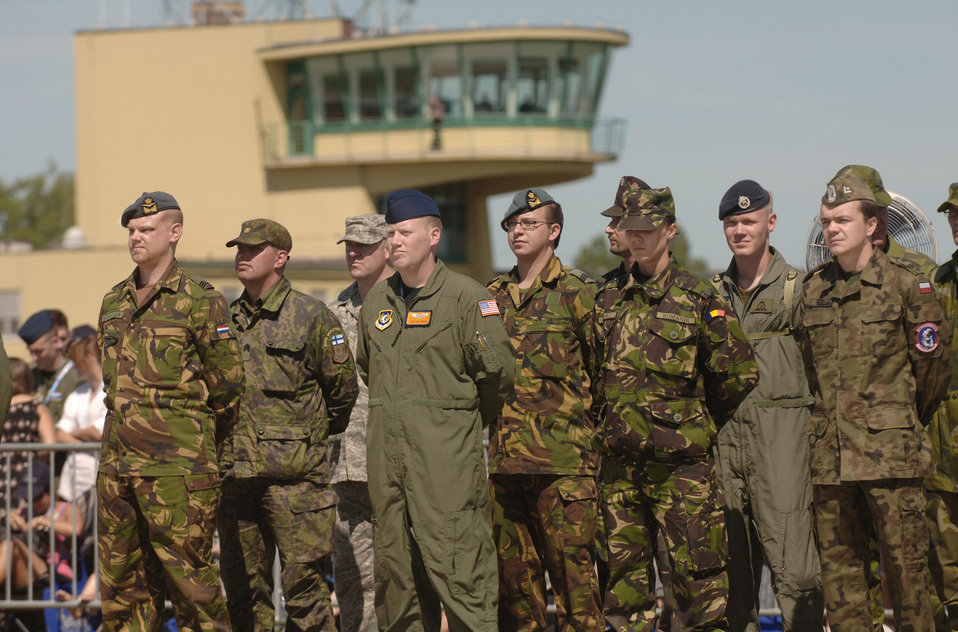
12 nations activate groundbreaking heavy airlift wing

Airmen representing the 12 partnering nations take part in the activation ceremony of a first-of-its-kind multinational Heavy Airlift Wing at Papa Air Base, Hungary. The ceremony celebrated the efforts of the 12 nations who, during the last 10 months, stood up the organization that will provide strategic airlift worldwide for humanitarian, disaster relief, and peacekeeping missions in support of the European Union, United Nations and NATO.